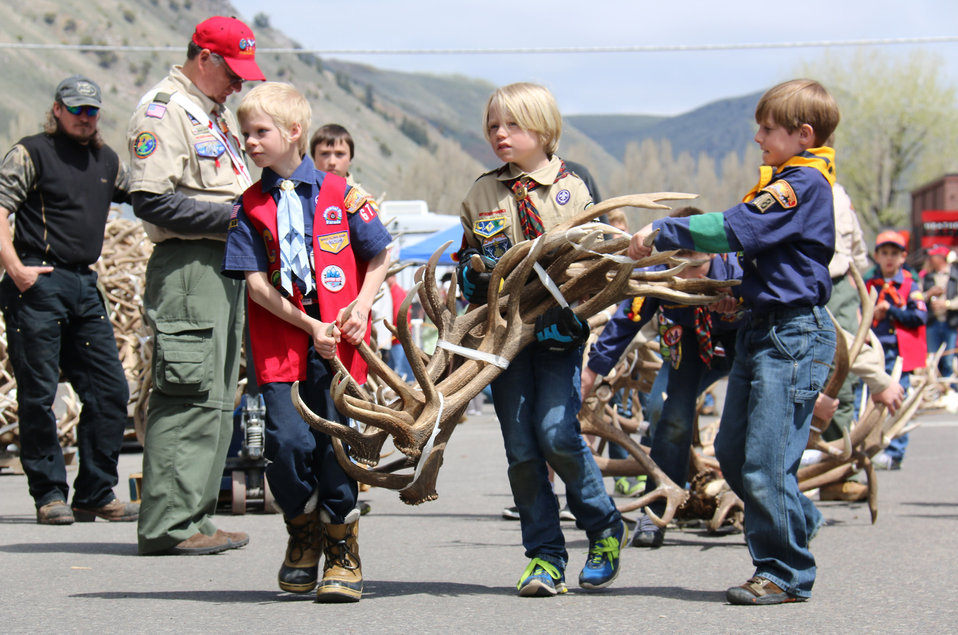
A Heavy Load

This auction lot took three Scouts to carry to the stage!